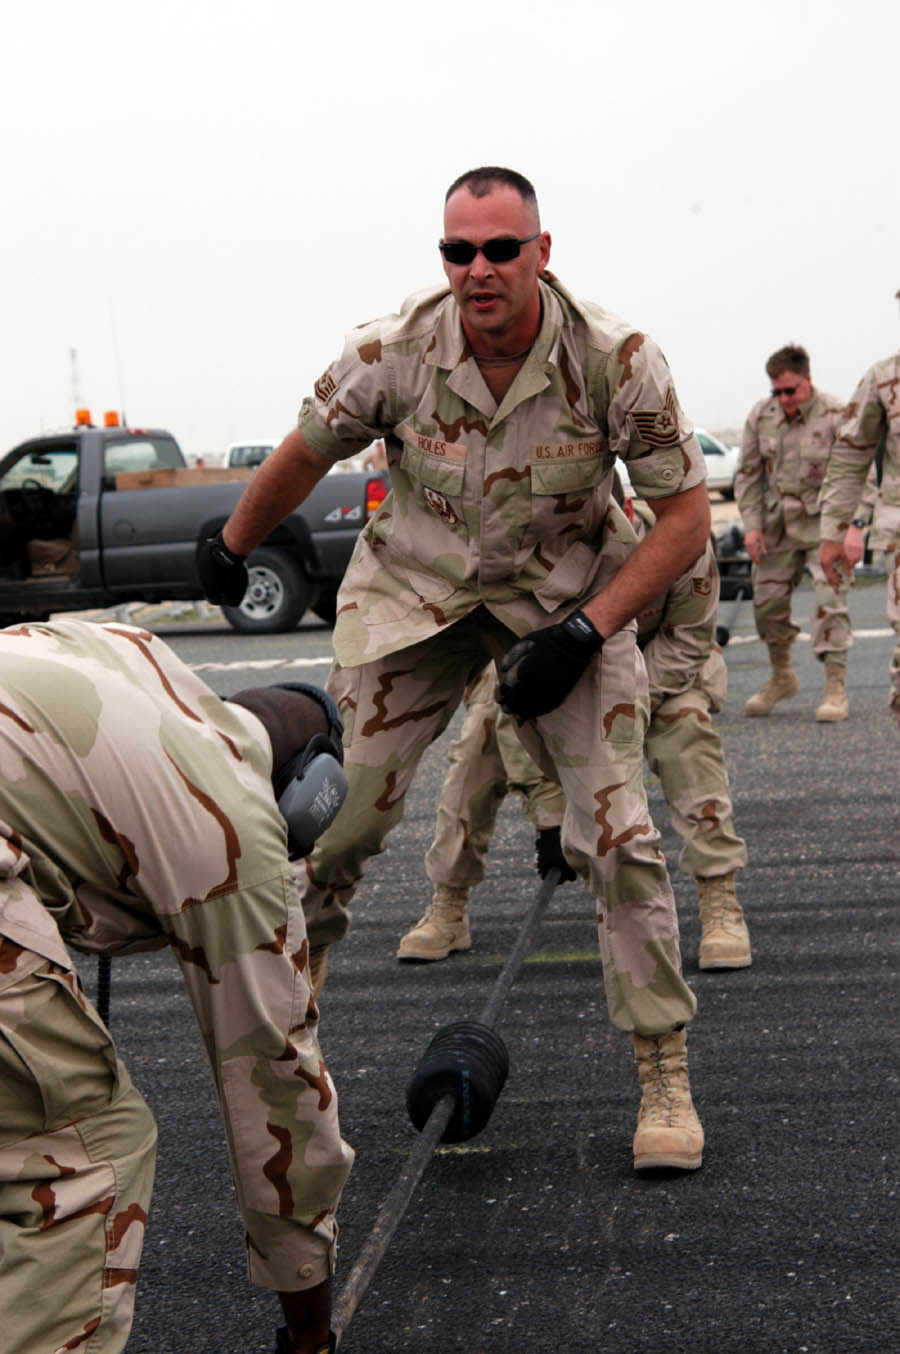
CE Airmen ready to snag an Eagle

SOUTHWEST ASIA -- Tech. Sgt. Brian Holes gives directions as he assists the power production crew with laying the steel braid cable across the runway, and spreading the "donuts" at six to eight feet apart. The donuts raise the cable off the ground so the arresting hook can engage the cable. Sergeant Holes is the 386th Expeditionary Civil Engineer power production flight superintendent.